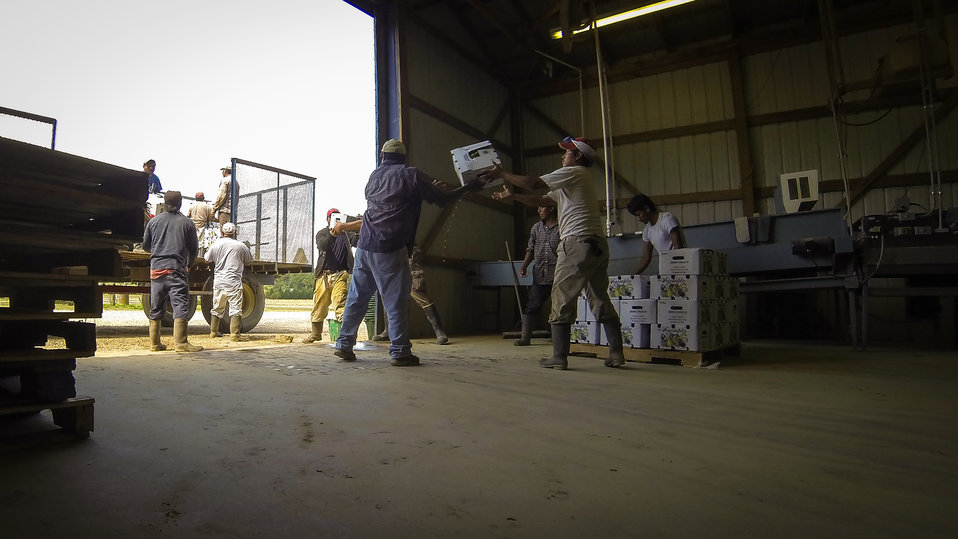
Fresh packed squash is transferred from processing trailer to pallets that will be loaded onto a waiting tractor-trailer rig for shipment at Kirby Farms in Mechanicsville, VA on Friday, Sept. 20, 2013. Kirby Farms devotes 200 acres of the farm to eggplant, spinach, beets, tomato, jalapeno peppers, melons and a variety of greens. Soybeans and small grain are grown on the remaining 300 acres. The fertile Virginia soil and their management practices, allows Kirby Farms to double and triple crop fields with rotational crop selection. Wholesalers, who buy from this farm, sell the produce to major supermarkets in the Mid-Atlantic region, from North Carolina to Maryland. Restaurants in the local area prepare and serve their harvest to patrons in the Greater Richmond, VA Region.